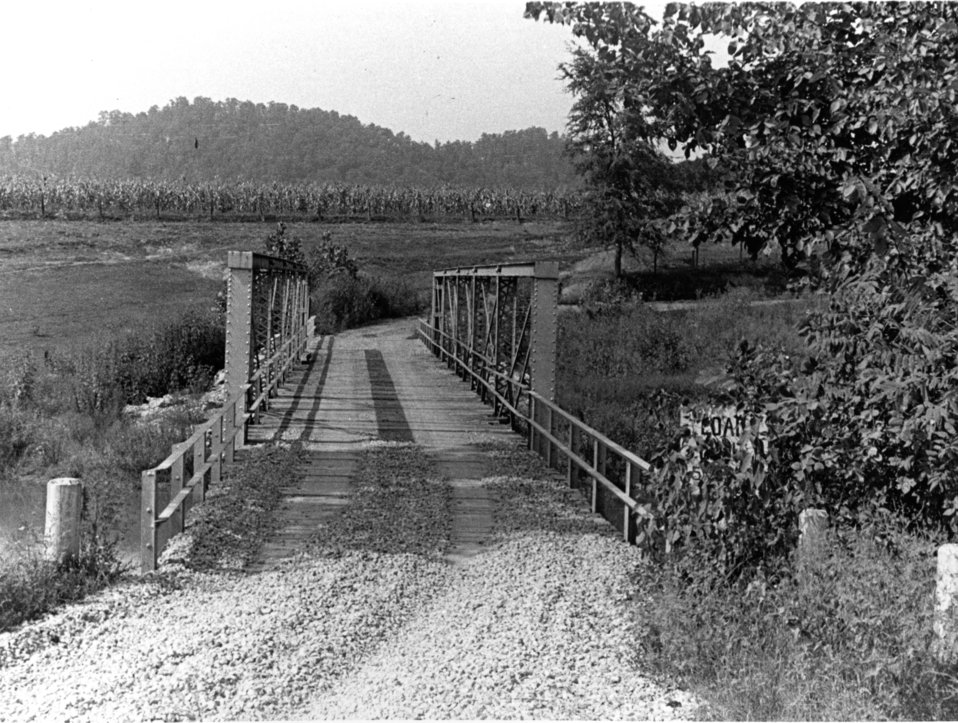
Recreation at Oak Ridge